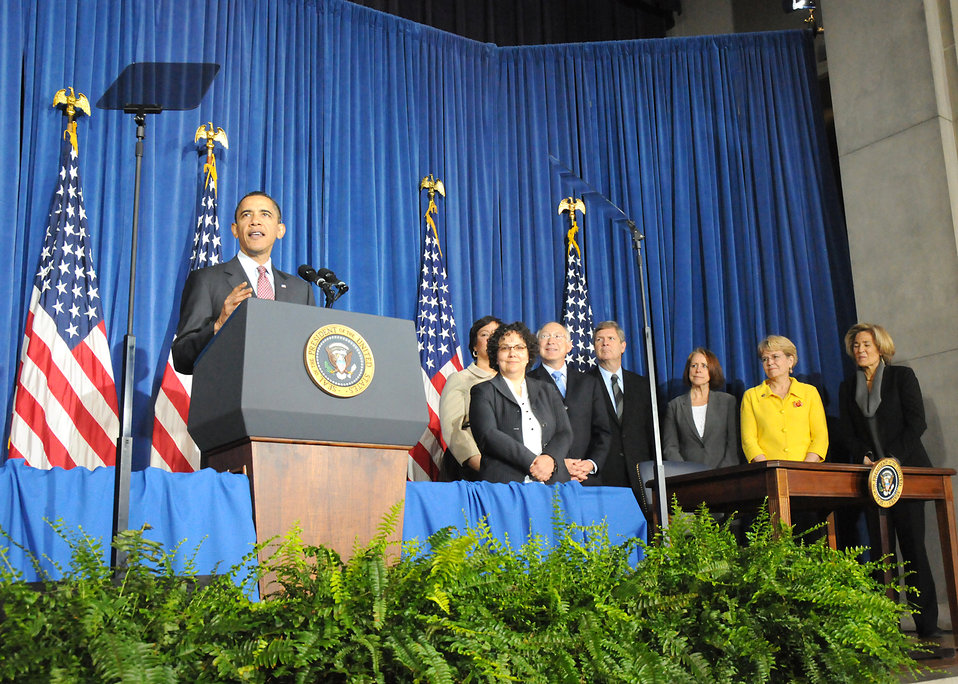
Listening to President Barack Obama's remarks are (L to R) Council on Environmental Quality Chair Nancy Sutley, Environmental Protection Agency Lisa Jackson (standing behind Ms. Sutley), Interior Secretary Ken Salazar, Agriculture Secretary Tom Vilsack, Assistant Secretary of the Army for Civil Works Jo-Ellen Darcy, National Oceanic and Atmospheric Administrator Dr. Jane Lubchenco, and Deputy Under Secretary of Defense for Installations and Environment Dorothy Robyn. The event took place at the Department of Interior in Washington, D. C. on April 16, 2010. USDA photo 10di1316-174